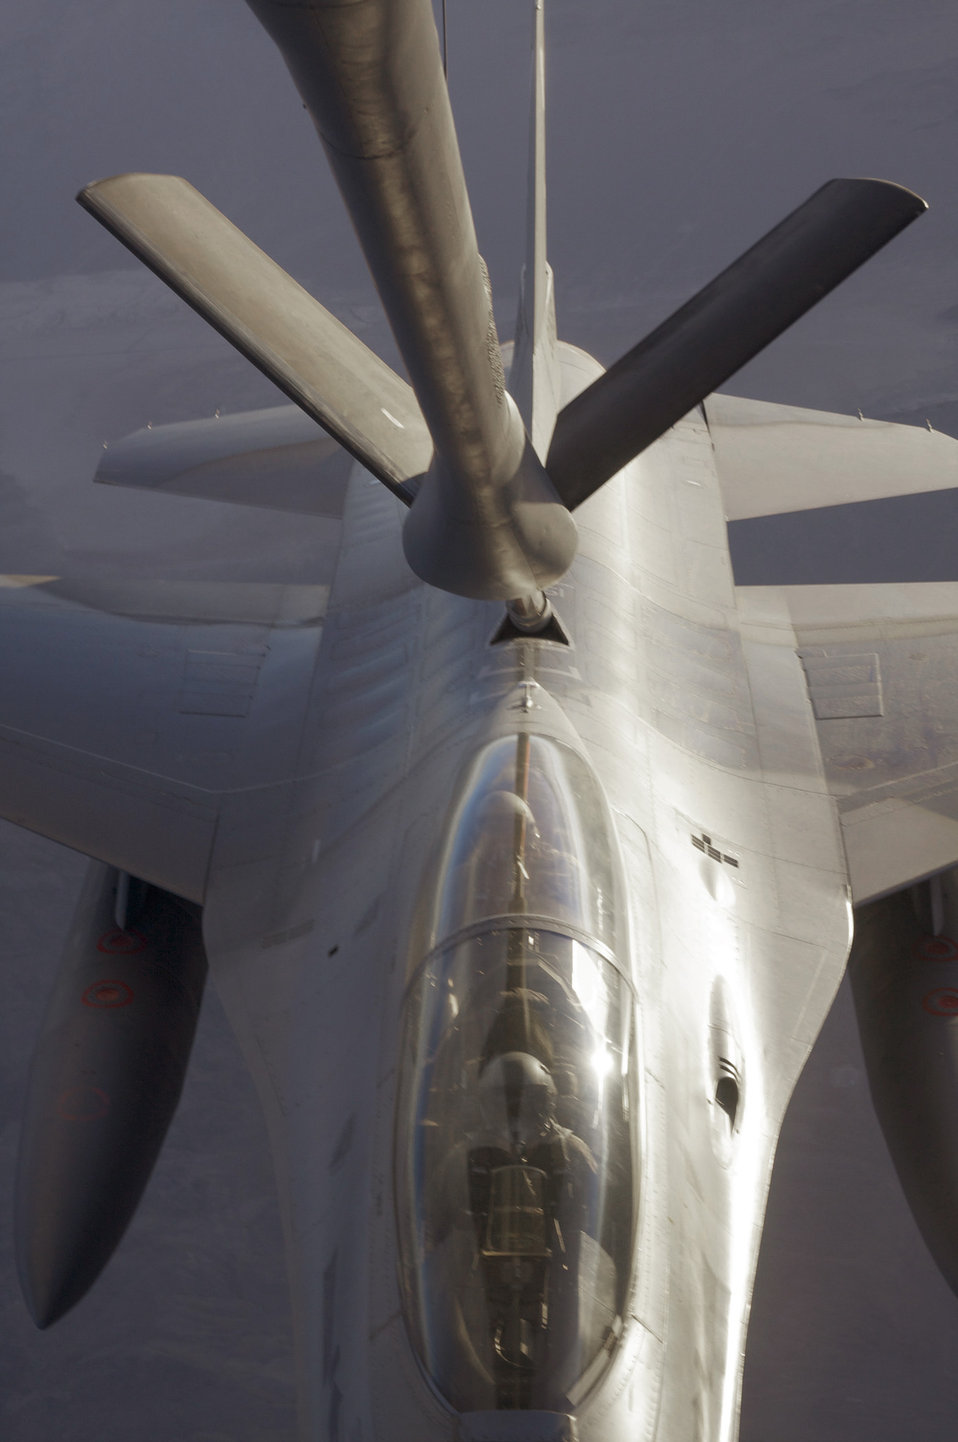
PAF at Red Flag

An F-16 from the Pakistan Air Force receives fuel from a KC-135 Stratotanker during an Exercise Red Flag 10-4 mission July 21, 2010, at Nellis Air Force Base, Nev. Red Flag is a realistic combat training exercise involving the air forces of the U.S. and its allies.